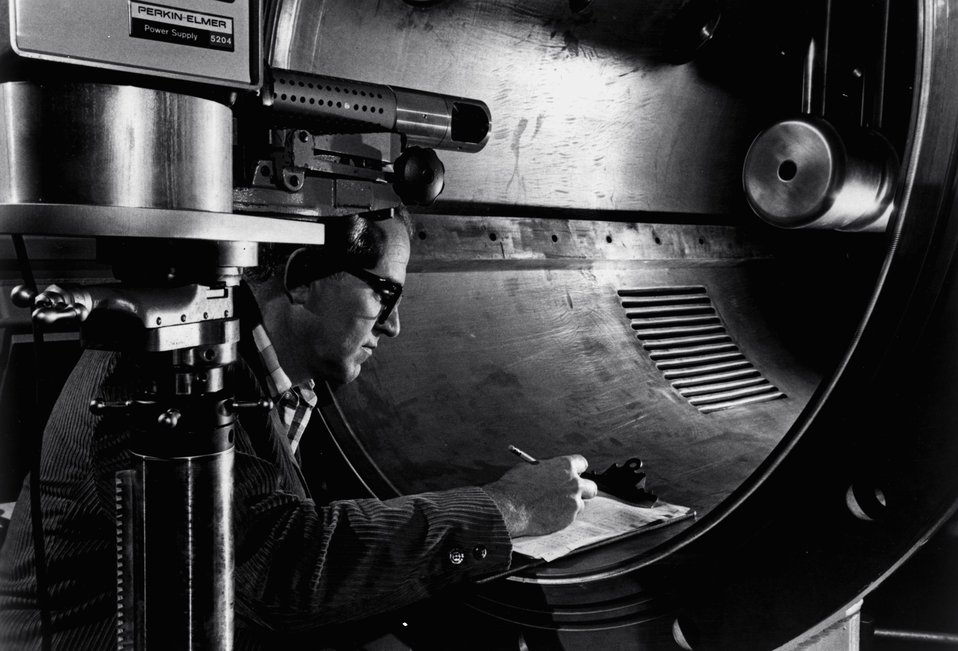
In this photo, a low-power transit laser is used to align drift tubes of the Alternating Gradient Synchronous at Brookhaven National Laboratory.